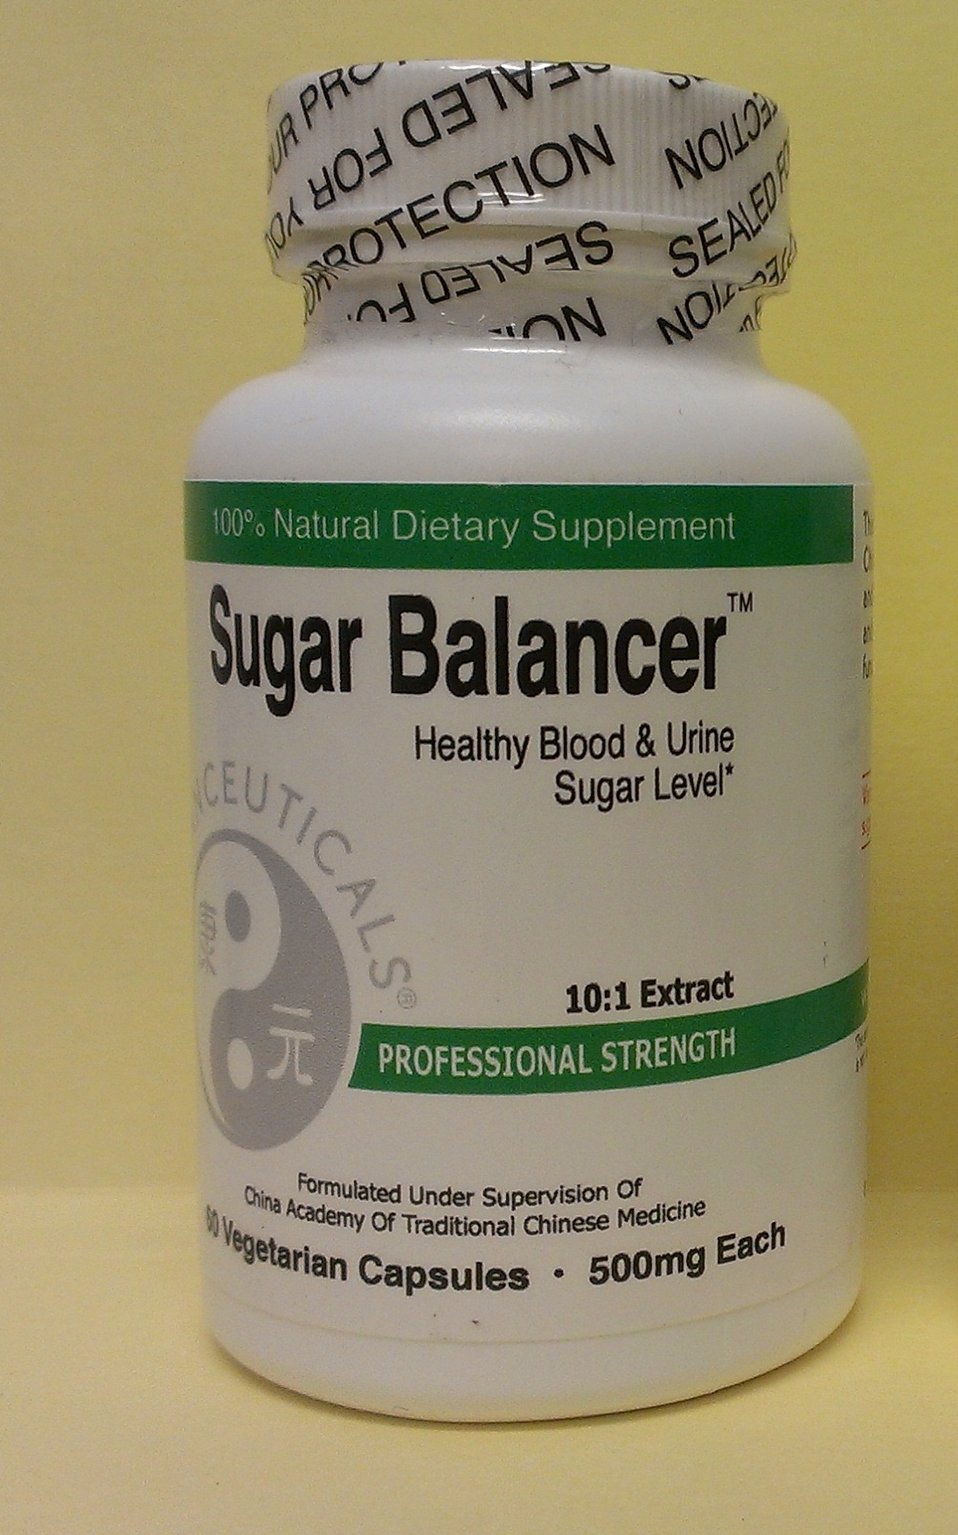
Illegally Sold Diabetes Treatments - Sugar Balancer

This product is promoted with unapproved claims to prevent or treat diabetes and/or its complications. FDA warns consumers to avoid unproven and potentially unsafe products sold as treatments for diabetes.